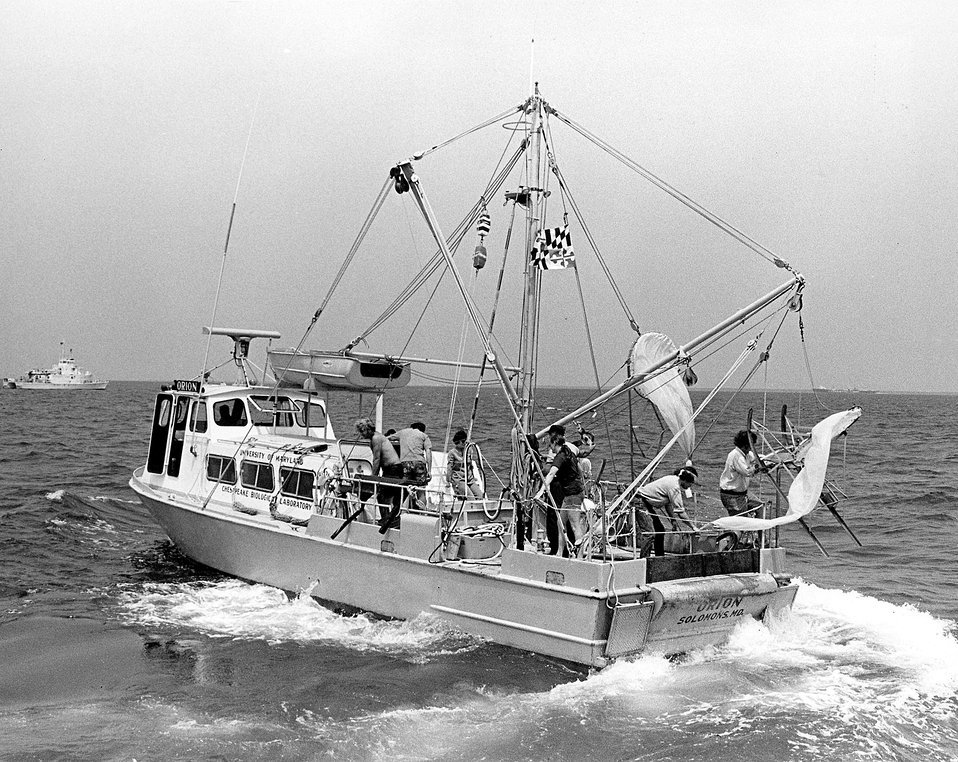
A scientific team aboard the University of Maryland research vessel, the Orion, gets ready to lower a plankton net as part of a research project designed to determine the possible effects of discharging waste heat from a nuclear electric generating plant into the Chesapeake Bay. Circa 1972.